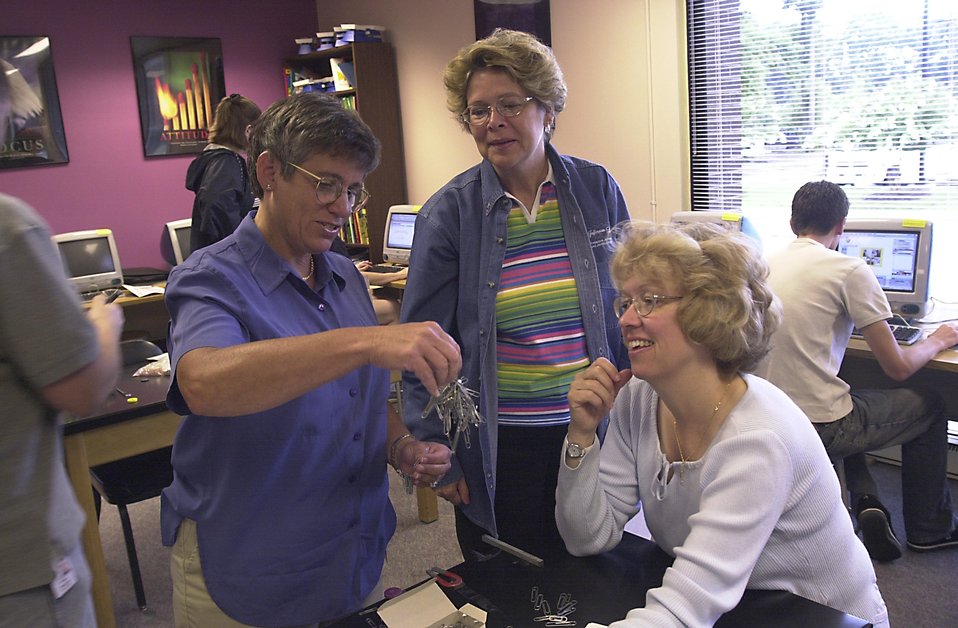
MIDDLE SCHOOL SCIENCE TEACHERS FROM ACROSS THE U.S. TAKE PART IN A MAGNETISM EXPERIMENT DURING JEFFERSON LAB'S P.E.S.T. PROGRAM.

IN JULY, 2003 THOMAS JEFFERSON NATIONAL ACCELERATOR FACILITY HELD ITS FOURTH ANNUAL P.E.S.T. (PHYSICS ENRICHMENT FOR SCIENCE TEACHERS) PROGRAM. THE PROGRAM IS DESIGNED TO FURTHER THE KNOWLEDGE OF MIDDLE SCHOOL SCIENCE TEACHERS BY PROVIDING THEM WITH A MINI COURSE IN BASIC PHYSICS.